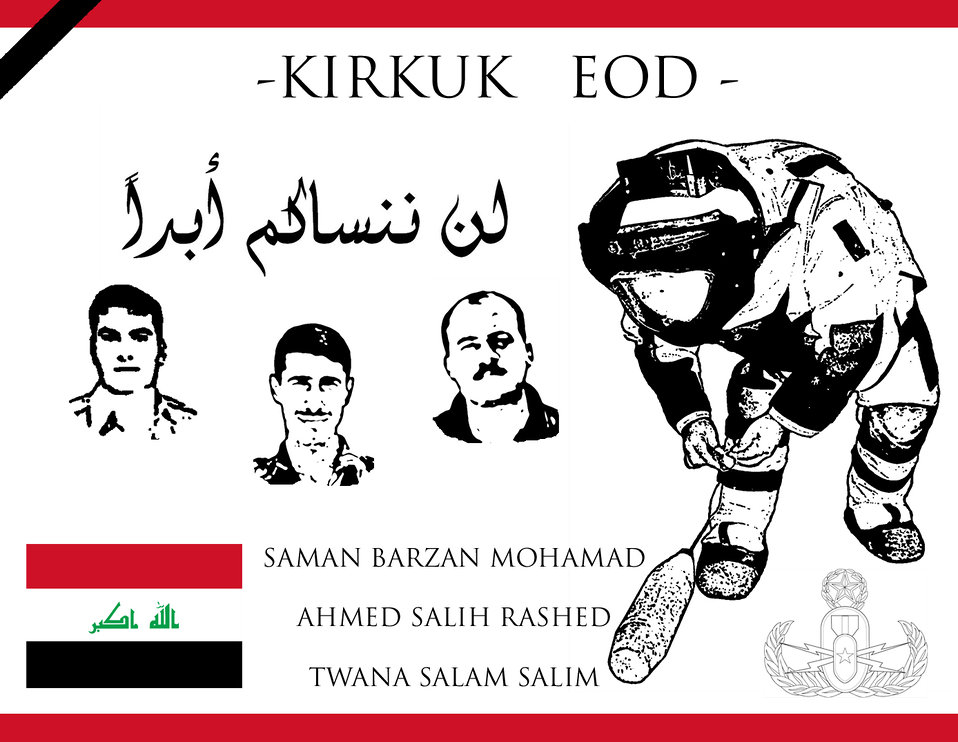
Airmen unveils memorial, raise money to honor families of fallen Iraqi comrades

Members of the 506th Civil Engineer Squadron explosive ordnance disposal team unveiled a mural painted to honor three fallen Iraqi police counter explosive team members in a ceremony held Feb. 23, 2010, at the EOD compound at Kirkuk Air Base, Iraq.